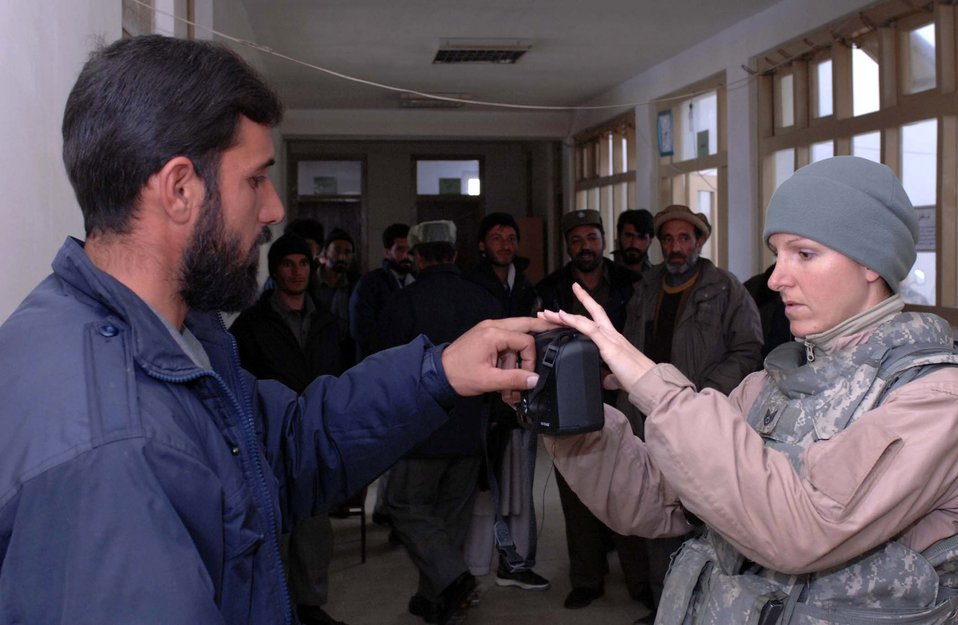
Gathering biometric data

Tech. Sgt. Buffie Verhagen obtains the finger print of a Kohistan II district Afghanistan national police noncommissioned officer Jan 14 at Bagram Air Base, Afghanistan. The fingerprint is cataloged in a database containing biometric information used to identify Afghans the Provincial Reconstruction Teams interact with. Sergeant Verhagen is deployed from Sheppard Air Force Base, Texas, and is currently assigned to the Bagram Provincial Reconstruction Team.